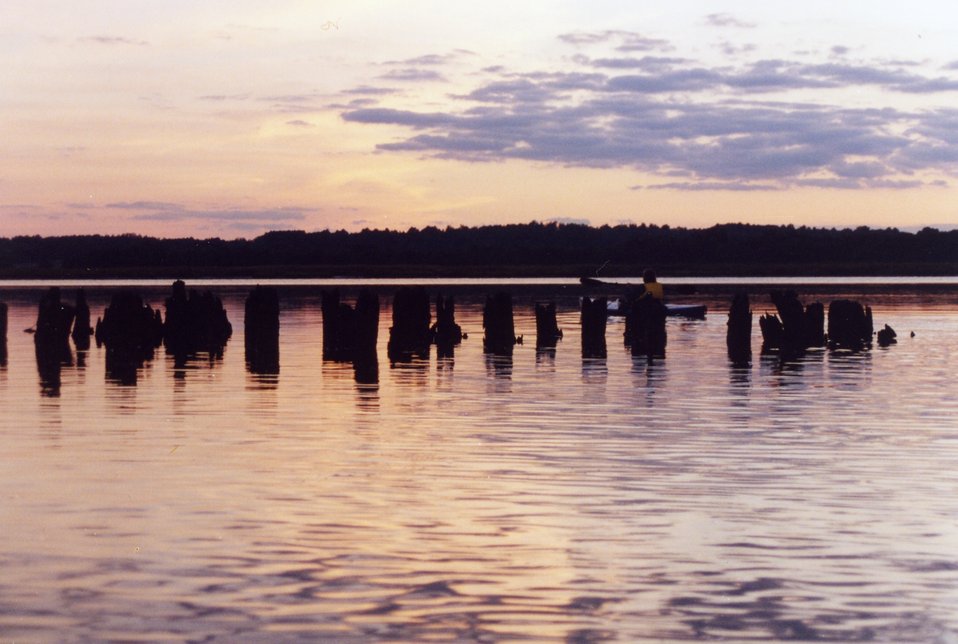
Sunset over the old ferry dock on the Patuxent River.